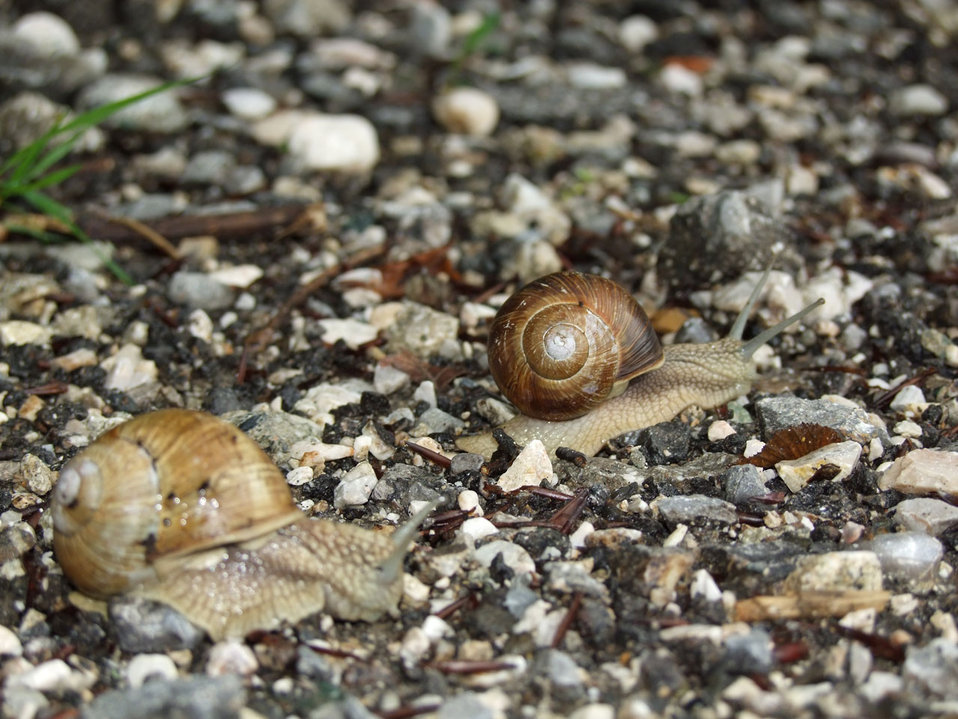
I will be the first

There were many snails that day in line moving in one way.